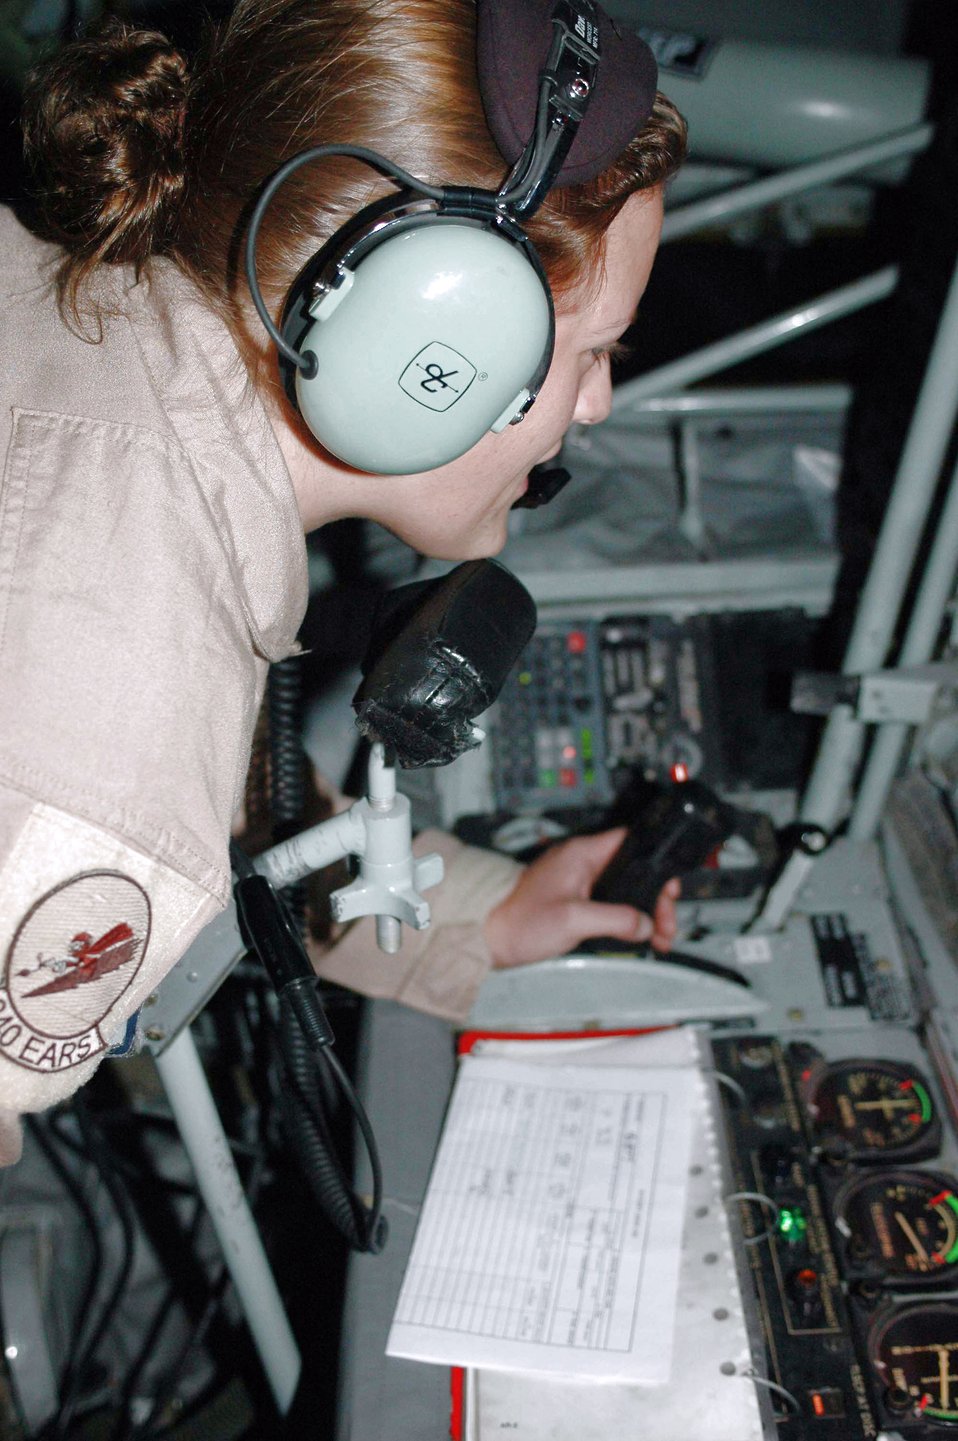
All-female crew completes inflight refueling over Iraq

Senior Airman Killian Lange prepares to refuel an A-6 and two Navy F-18 Hornets March 18 over Iraq. Airman Killian was part of an all-female aircrew during the flight, which commemorated the role of women in the Air Force as part of National Women's History Month. She is a 340th Expeditionary Air Refueling Squadron boom operator and deployed from Royal Air Force Mildenhall, England.